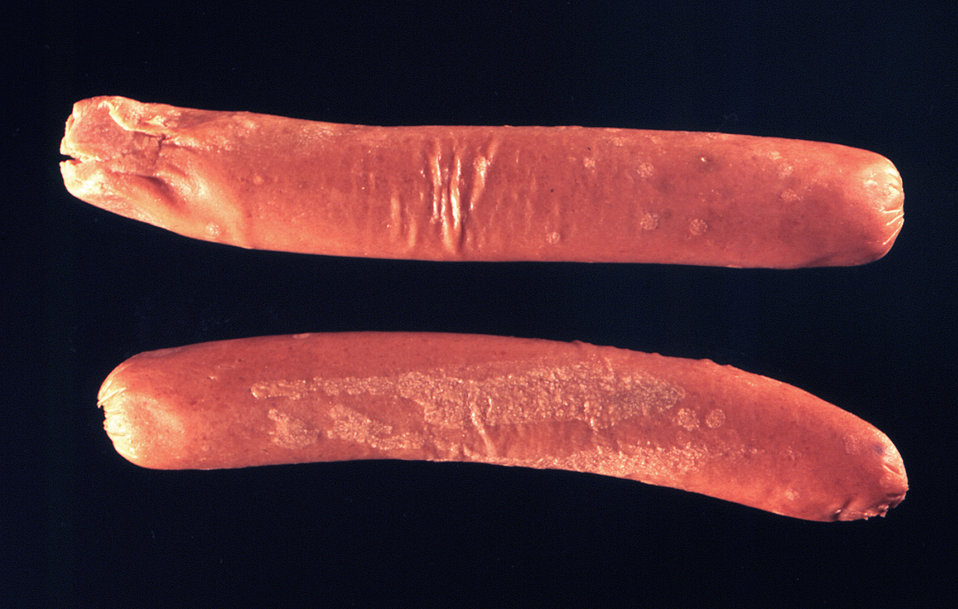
Note the fungal colonies on these two frankfurters. The organism responsible for these colonies is unknown.